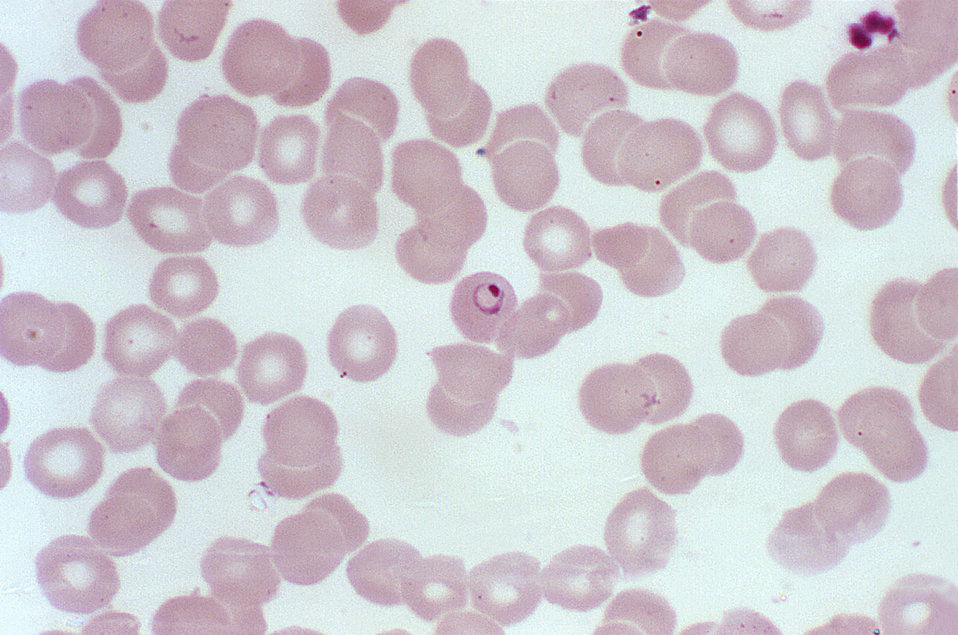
A photomicrograph of a blood smear with Plasmodium malariae parasites infecting RBCs during the ring stage.